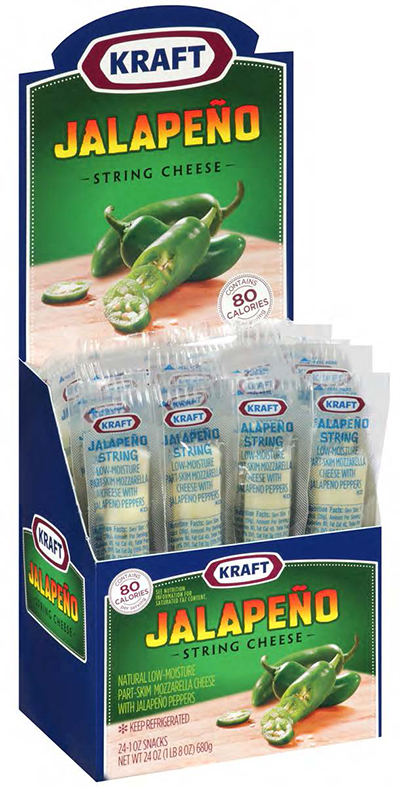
RECALLED – Cheese

October 25, 2013 – Product Recall – Kraft Voluntarily Recalls Some Varieties of Kraft And Polly-O String Cheese And String Cheese Twists Due to Premature Spoilage.